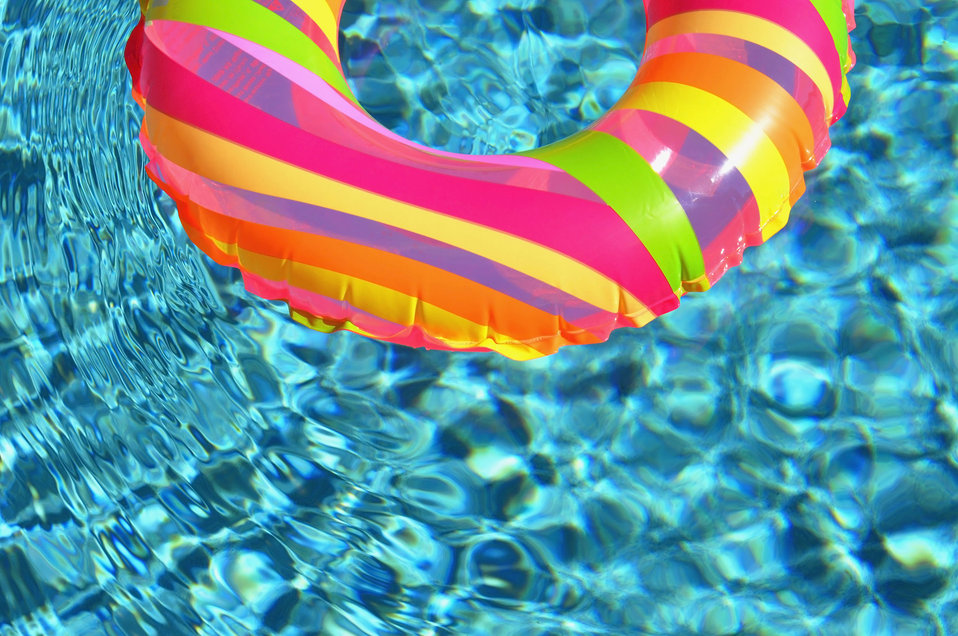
Swim ring in the pool

Photo of a colorful swim ring in a pool.